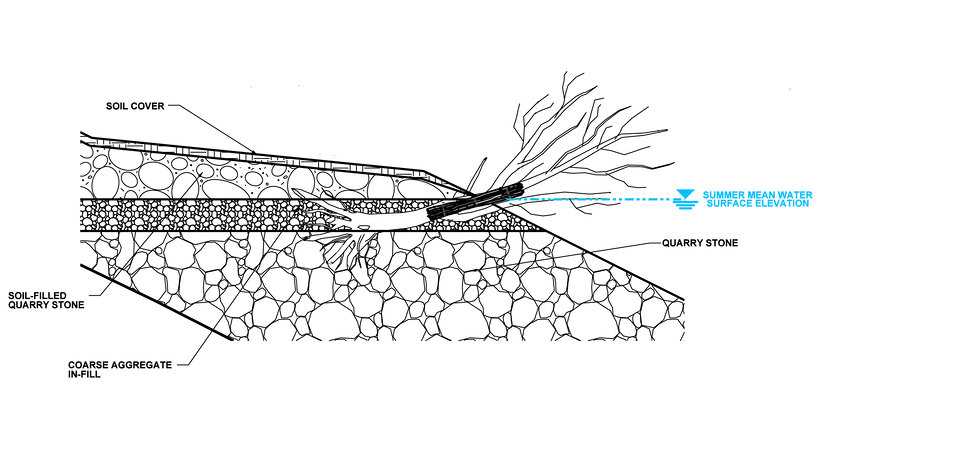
Woody material providing fish habitat and sediment accrual

This graphic illustrates how woody debris, intended to benefit American River habitat, was deposited at two sites during stream bank erosion repairs between the Watt Avenue boat launch and Mayhew Drain in Sacramento, Calif. The plants were placed more than 15 feet away from the levee to comply with U.S. Army Corps of Engineers safety standards for vegetation on levees, improving river habitat without compromising levee stability. It’s all part of the Sacramento River Bank Protection Project, a joint effort between the U.S. Army Corps of Engineers Sacramento District and Central Valley Flood Protection Board to reduce flood risk by maintaining levees and reducing stream bank erosion along the Sacramento River and its tributaries.